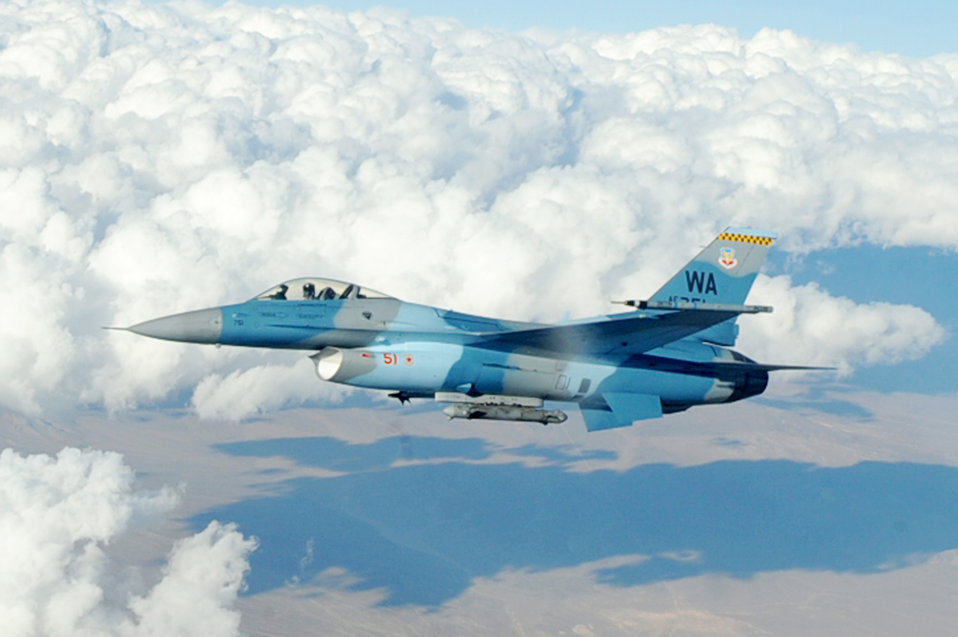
15 units, 3 countries converge on Nellis for Red Flag

An F-16 Fighting Falcon Aggressor flies over the Nevada Test and Training Range after being refueled by an Ohio Air National Guard KC-135 Stratotanker Oct. 19, 2009. Red Flag 10-01 is a realistic combat training exercise involving the air forces of the United States and its allies. The exercise is conducted on the 15,000-square-mile Nevada Test and Training Range, north of Las Vegas.